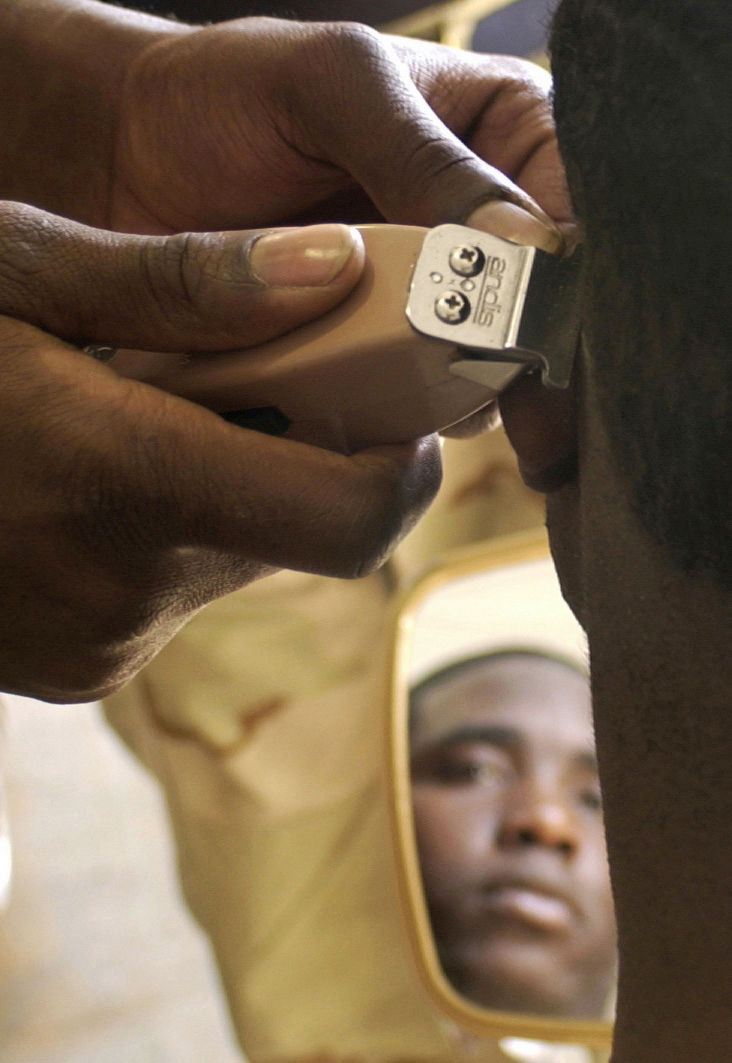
A trim please...

OPERATION IRAQI FREEDOM -- A vehicle maintainer from the 410th Air Expeditionary Wing gets his hair cut by a co-worker March 28, 2003. Forward deployed in an undisclosed location, the 410 AEW is responsible for critical sorties flown in support of Operation Iraqi Freedom. Operation Iraqi Freedom, a multi-national coalition effort to liberate the Iraqi people, eliminate Iraq's weapons of mass destruction, and end the regime of Saddam Hussein.